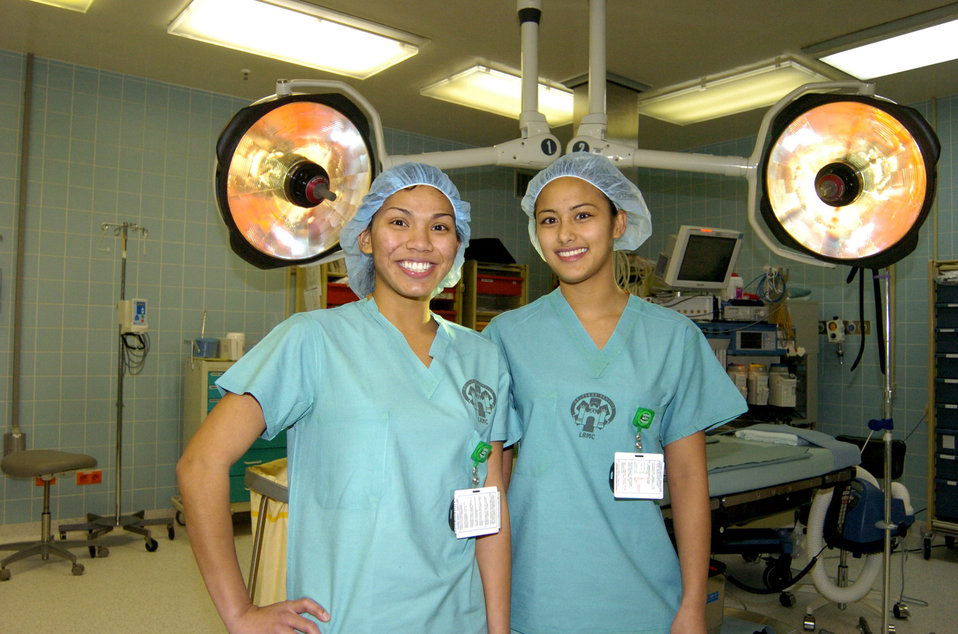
Buddy System proves friendly for medics from Guam

Airman Taija Alcantara (left) and Airman Tiamae Cruz prepare for surgery in February in an operating room at Landstuhl Regional Medical Center, Germany. They are in training to become surgical technicians. Their military careers have continued to follow each other since they joined under the Air Force Buddy System in Guam.